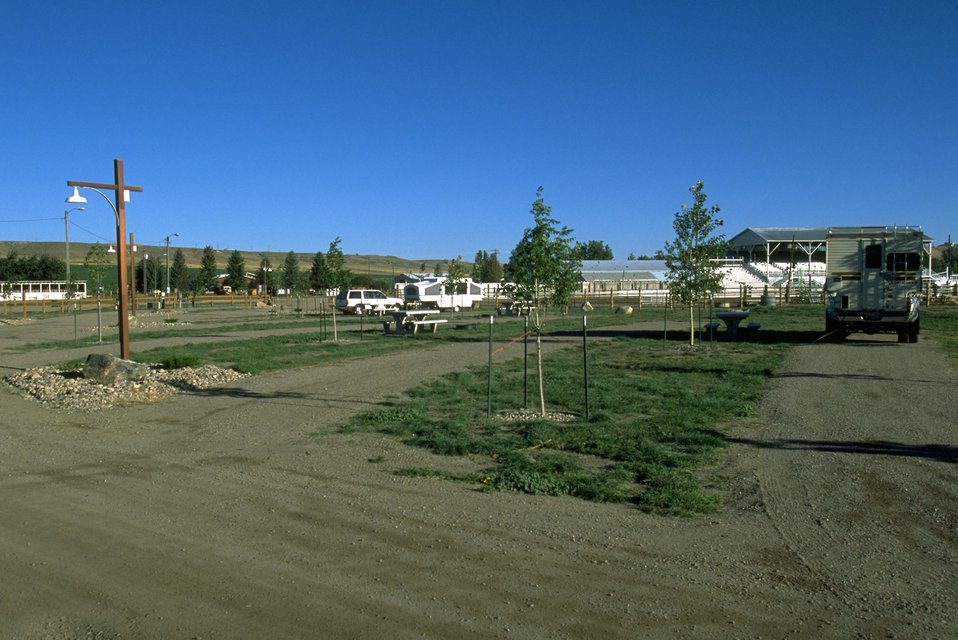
Canoe launch camping area at Fort Benton Fairgrounds